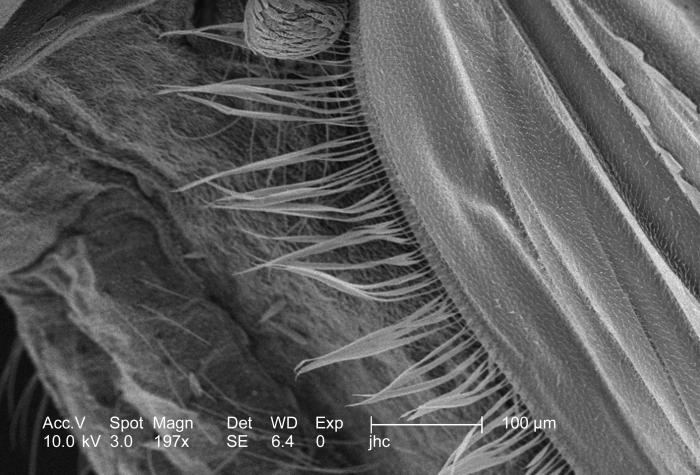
At a relatively low magnification of only 197x, this scanning electron micrograph (SEM) revealed some of the morphologic features displayed by an Anopheles gambiae mosquito. Included in the field of view was the posterior edge of one of the insect's two wings. Note that this wing's edge is adorned with"fringe scales", which relay changes in wind speed and direction during flight back to the mosquito. Also note the small whorled structure at the top of the image, which represents the "haltere", the vestige of the second set of wings that has evolved into a flight stabilizing structure. There are approximately 3,500 species of mosquitoes grouped into 41 genera. Human malaria is transmitted only by females of the genus Anopheles. Of the approximately 430 Anopheles species, only 30-40 transmit malaria in nature. An organism that transmits a disease to another organism is known as a "vector".